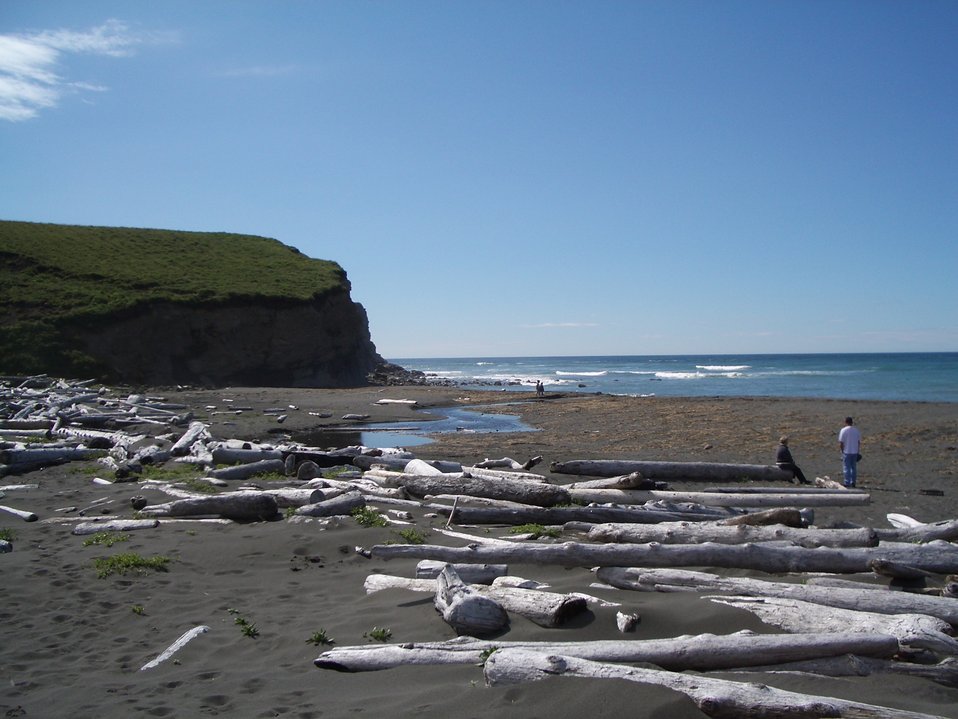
A log-strewn beach on Kodiak Island.